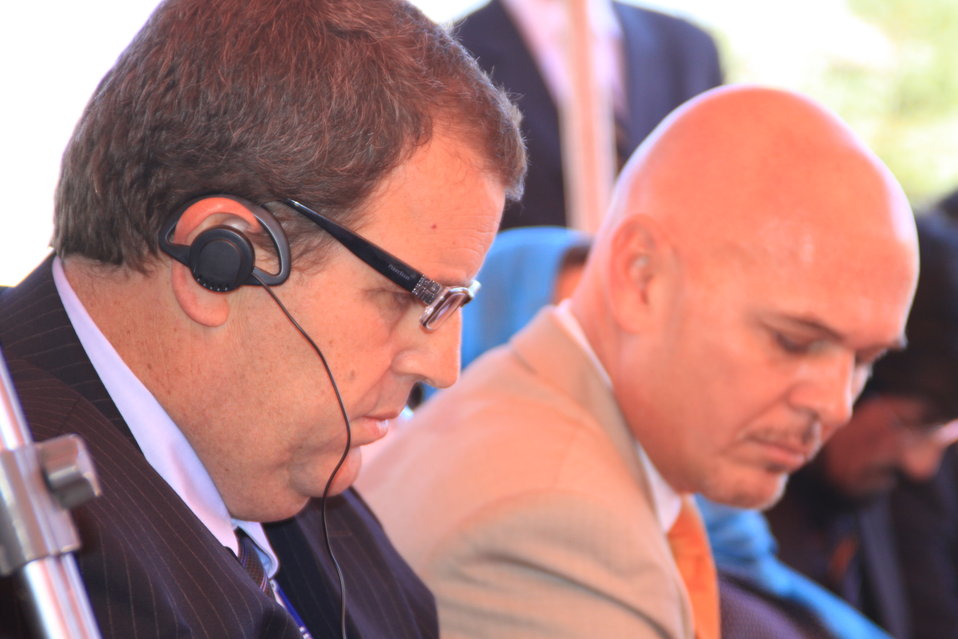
AVIPA Plus Wheat Seed Distribution 101005

US Ambassador Karl Eikenberry and USAID Acting Mission Director Kevin Brownawell joined the Minister of Agriculture, Irrigation and Livestock, H.E. Minister Mohammed Rahimi in signing a Memorandum of Understanding and distributing vouchers to area farmers for wheat and fertilizer.

US Ambassador Karl Eikenberry and USAID Acting Mission Director Kevin Brownawell joined the Minister of Agriculture, Irrigation and Livestock, H.E. Minister Mohammed Rahimi in signing a Memorandum of Understanding and distributing vouchers to area farmers for wheat and fertilizer.